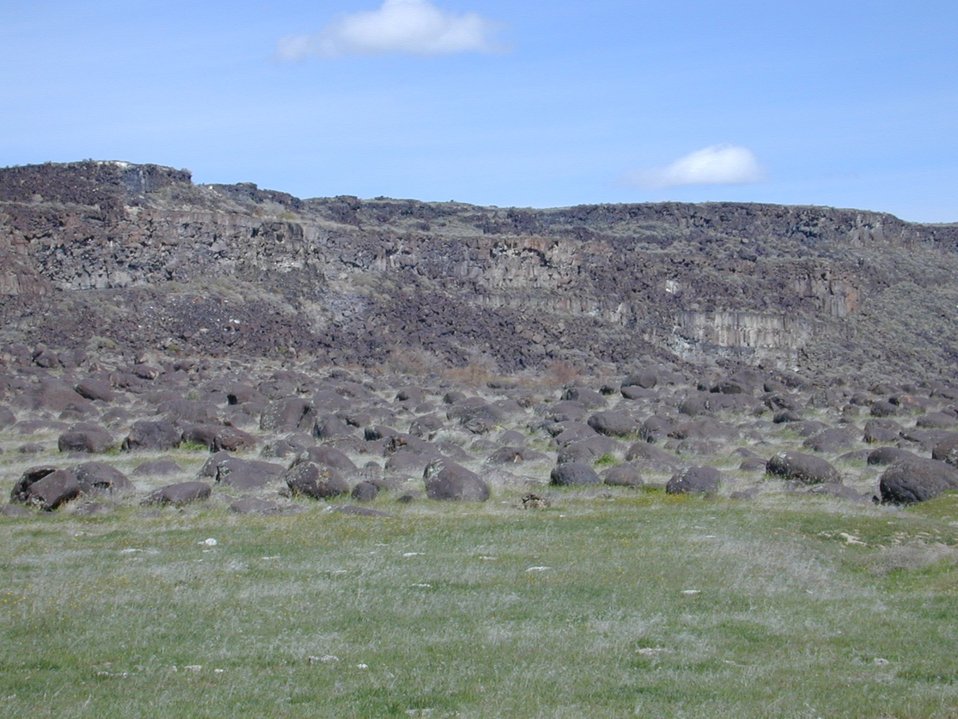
Snake River Birds of Prey National Conservation Area Lower Snake River District LSRD Snake River Canyon